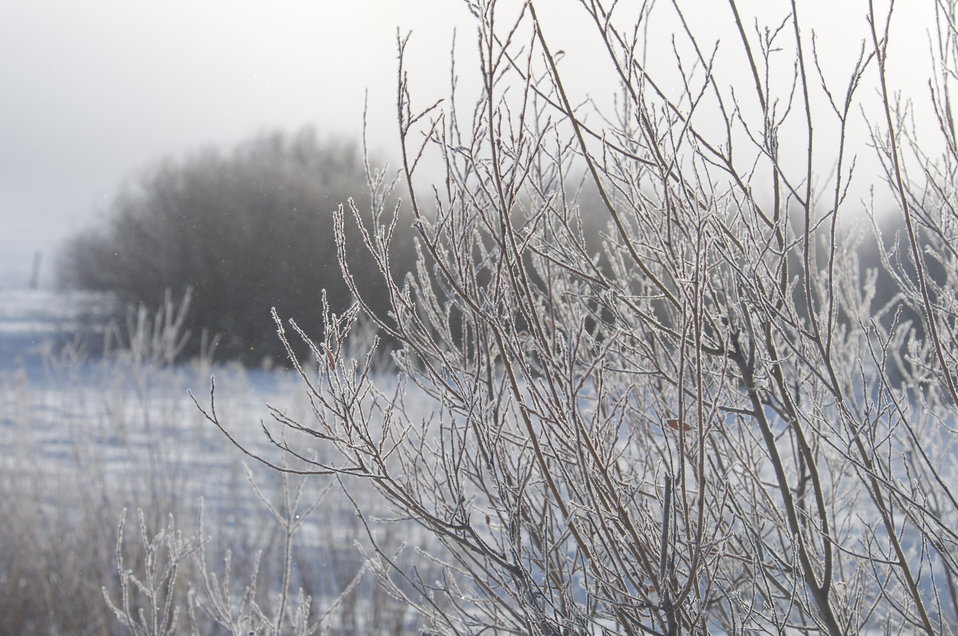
Frosty Willows

The morning sun enhances the beauty of the frost on the willows outside of the visitor center.

Credit: USFWS / Mike Nordell, seasonal refuge naturalist